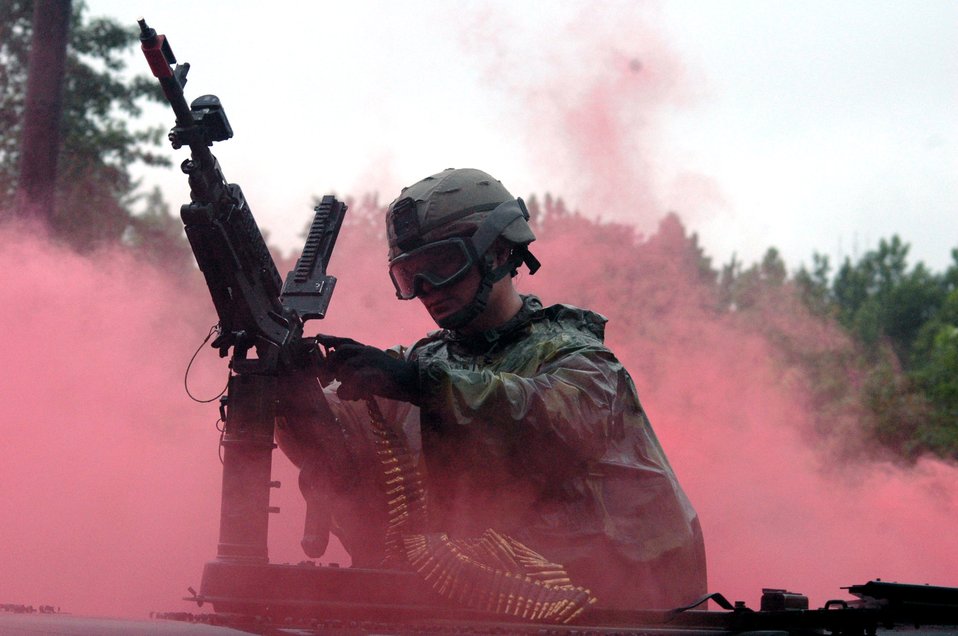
After one year, Phoenix Warrior course soaring high

A student in the Air Force Phoenix Warrior Training Course 07-6 participates in convoy training Aug. 21 on a range at Fort Dix, N.J. The course is taught by the U.S. Air Force Expeditionary Center's 421st Combat Training Squadron where Air Force security forces Airmen practice expeditionary combat skills.